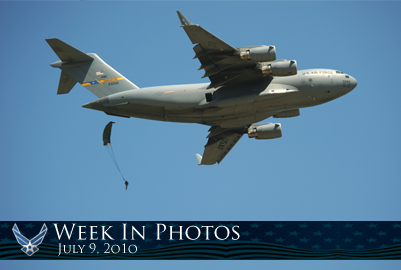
Air Force Week in Photos for July 9, 2010, highlights photos from around the Air Force. In this photo by Staff Sgt. Tim Chacon, a U.S. Army paratrooper jumps from a C-17 Globemaster III from Joint Base Charleston, S.C., during a joint forcible entry exercise.